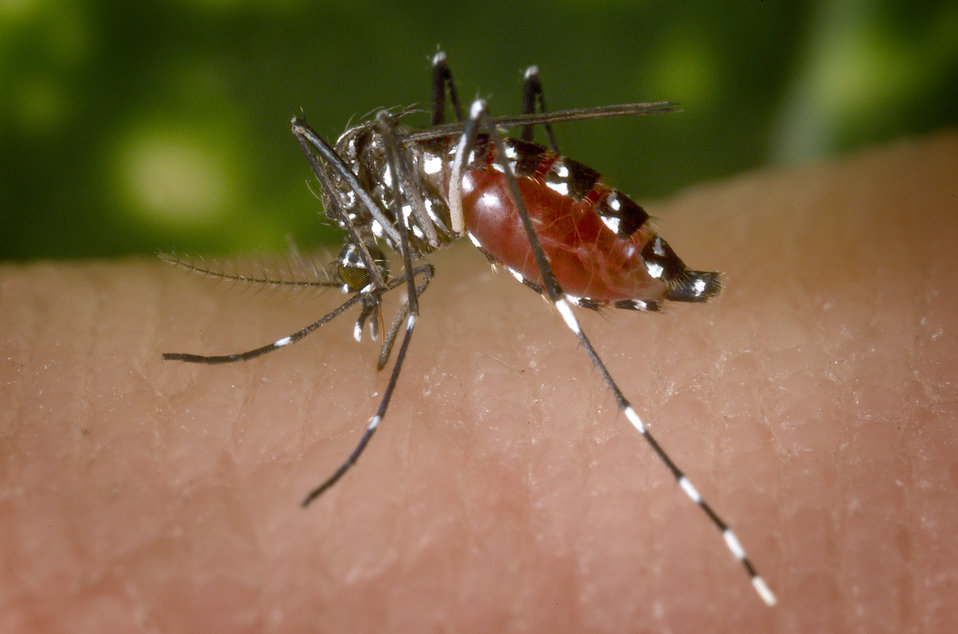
A blood-engorged female Aedes albopictus mosquito feeding on a human host.